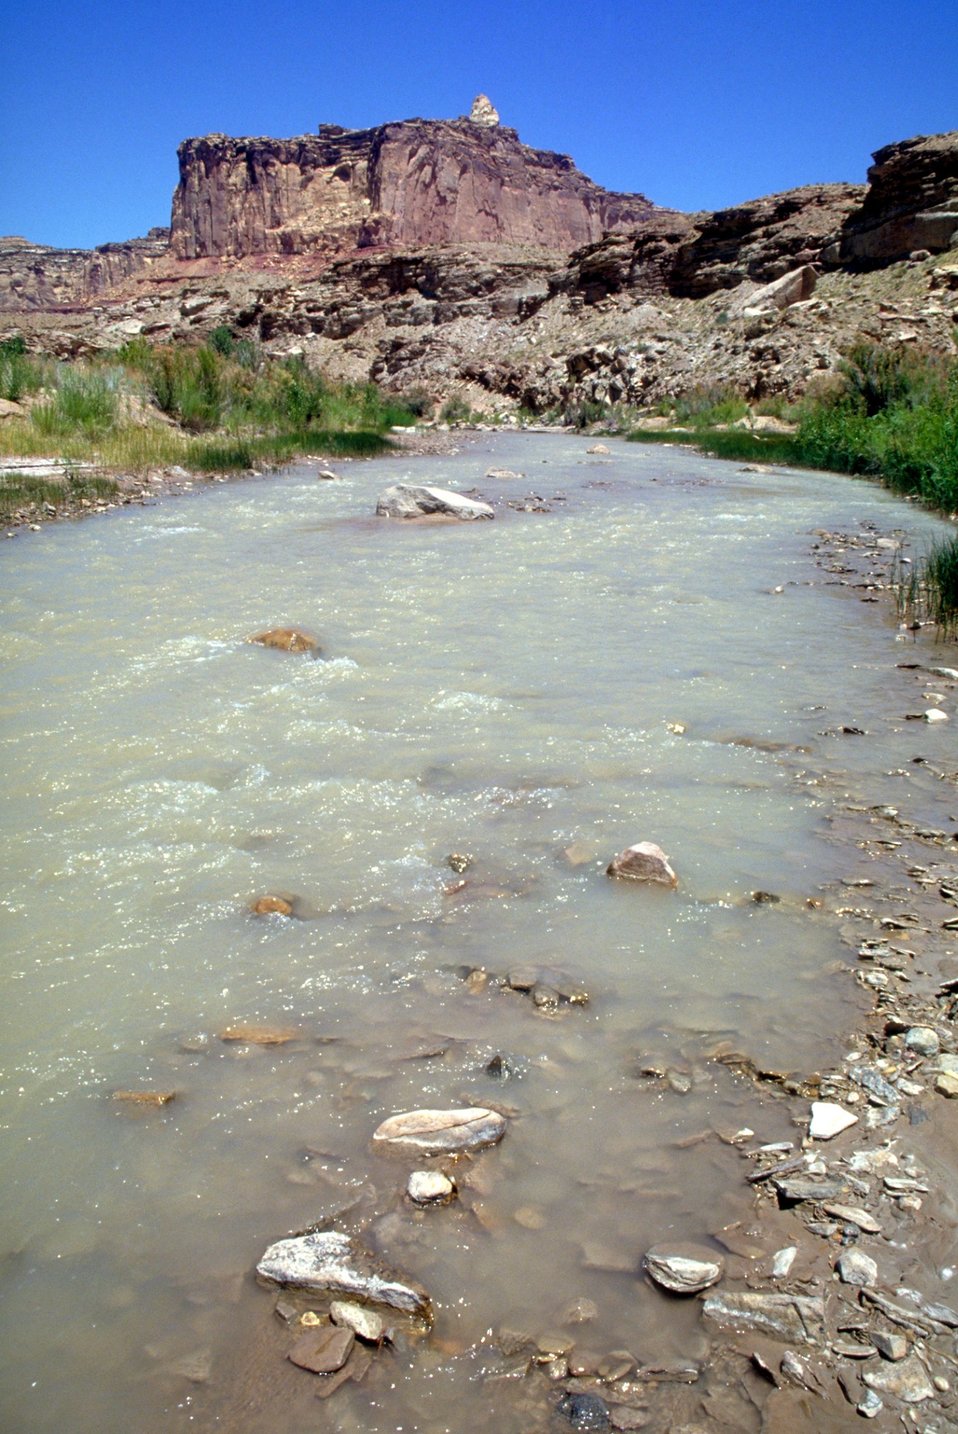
Upper Muddy Creek along the Red Canyon Loop, San Rafael Swell.